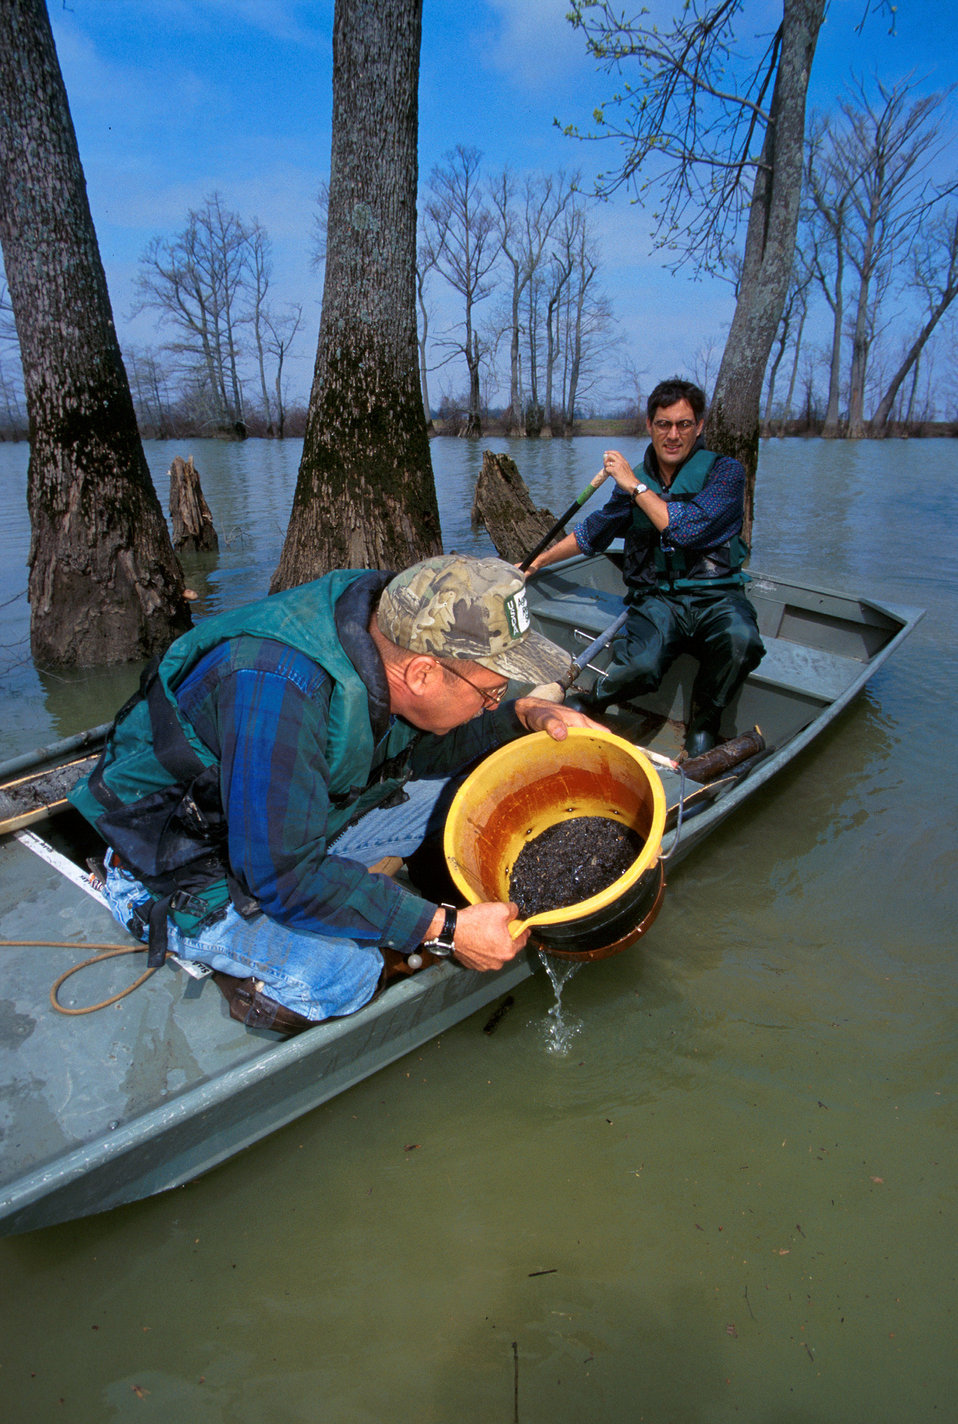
U.S. Department of Agriculture (USDA) Agricultural Research Service (ARS) ecologists Charlie Cooper and Scott Knight sample bottom sediments in Thighman Lake, Mississippi for small invertebrates that indicate ecosystem health.